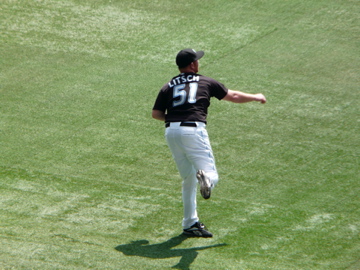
Jesse Litsch
19:07, 6 September 2008 . . DinoZon . . 360×270 (64 KB)